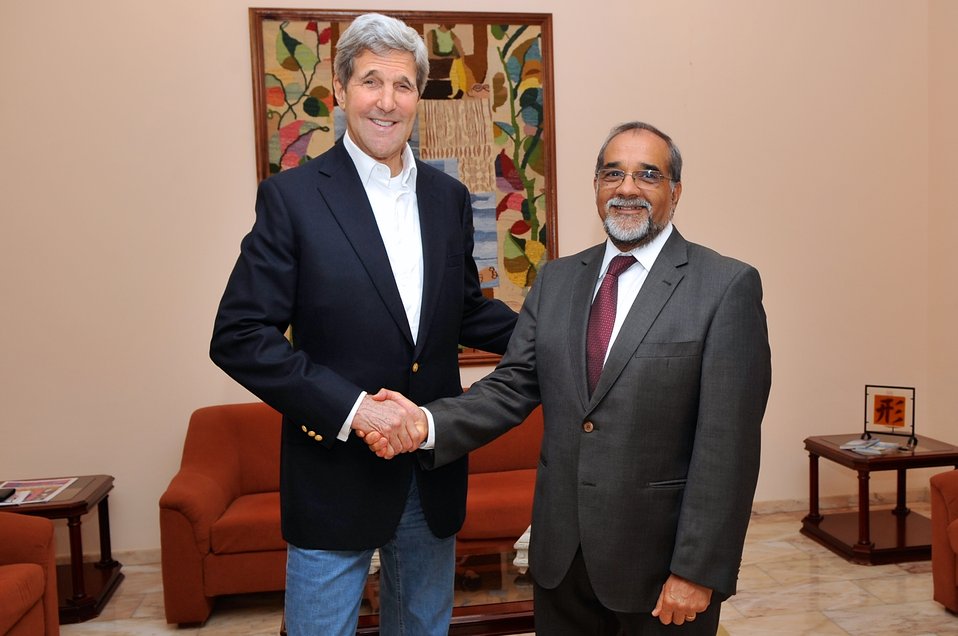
Secretary Kerry Poses For Photo With Foreign Minister Borges of Cape Verde During Refueling Stop on Sal Island

U.S. Secretary of State John Kerry poses for a photo with Foreign Minister Jorge Alberto Da Silva Borges of Cape Verde during an impromptu meeting while the Secretary's airplane refueled on Sal Island on May 5, 2014.